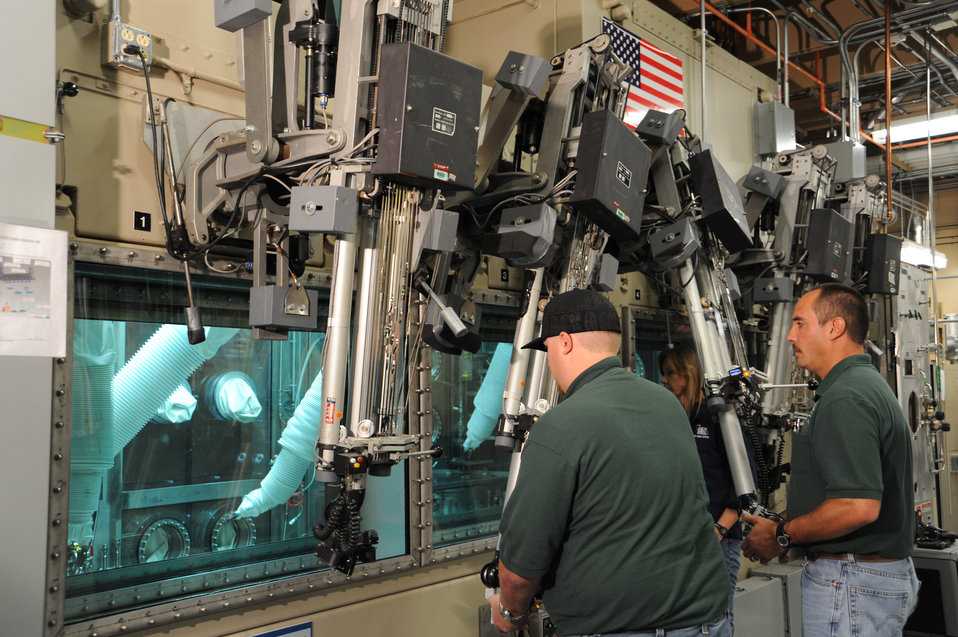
SPACE POWER SYSTEM ASSEMBLY AT IDAHO NATIONAL LABORATORY WHERE EMPLOYEES USE A SOPHISTICATED HOT CELL TO FUEL RADIOISOTOPE POWER SYSTEM BEFORE TESTING AND SHIPMENT TO NASA FOR DEEP SPACE MISSIONS.